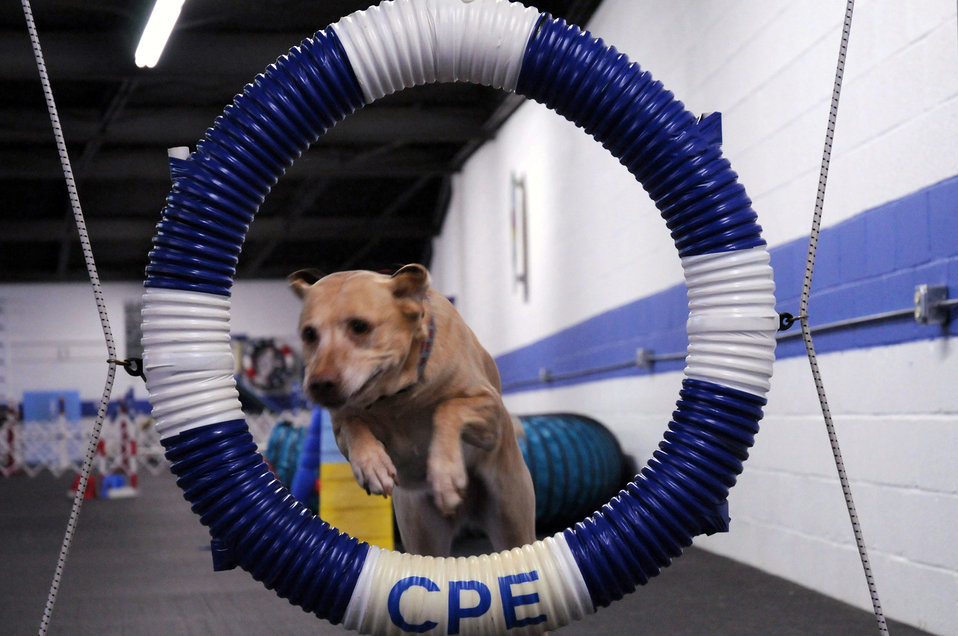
Rags to Riches in the American Heartland

Zoey, a 9-year-old Labrador retriever belonging to 1st Lt. Heather Greatting, completes an obstacle Feb. 11 during agillity. The lieutenant obtained Zoey from a Labrador rescue center and currently competes with her in canine agility. Lieutenant Greatting is a space intelligence surveillance and reconnaissance systems employment analyst with the National Air and Space Intelligence Center at Wright-Patterson Air Force Base, Ohio.